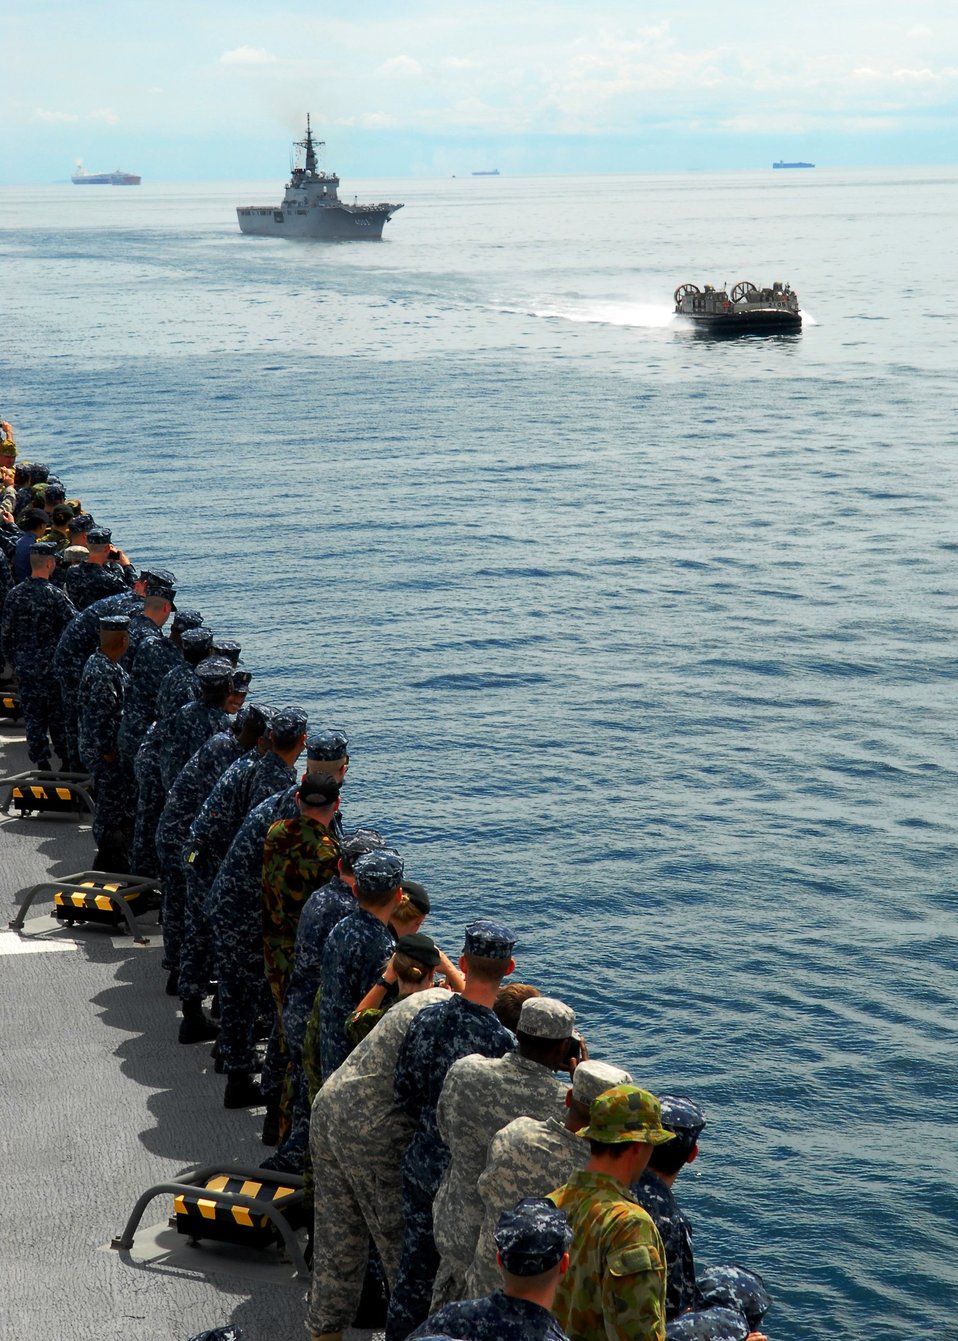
Sailors and Soldiers Watch as a Japanese Landing Craft Air Cushion Passes

Sailors and Soldiers embarked aboard the Military Sealift Command hospital ship USNS Mercy (T-AH 19) watch as a Japanese landing craft air cushion (LCAC) passes during a Pass and Review demonstration with the Japan Maritime Self Defense Force ship JDS Kunisaki (LST 4003) on July 5, 2010. Mercy is transiting the South China Sea en route to Indonesia in support of Pacific Partnership 2010, the fifth in a series of annual U.S. Pacific Fleet humanitarian and civic assistance endeavors to strengthen regional partnerships.